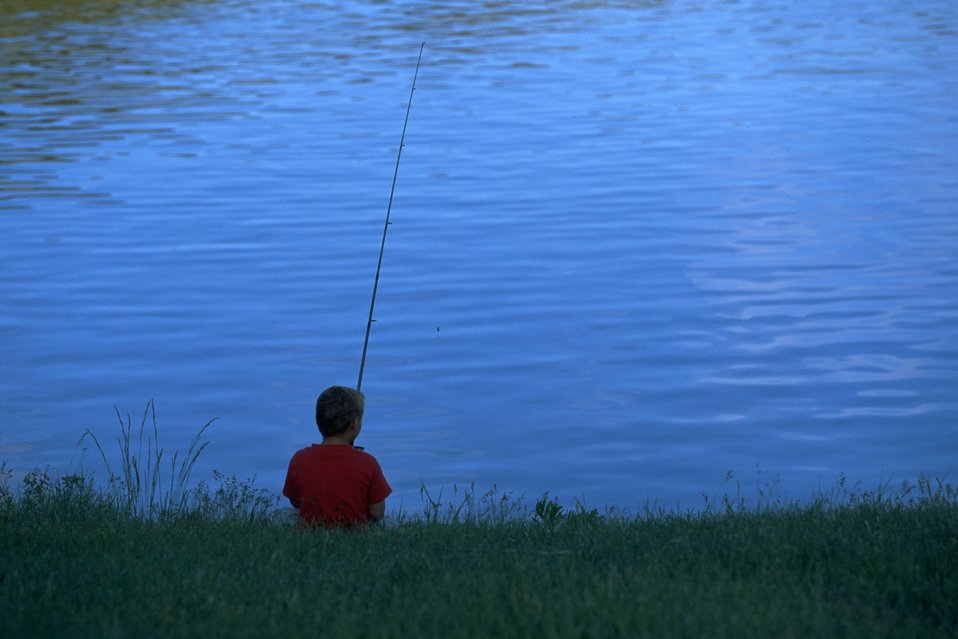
Boy fishing on the bank of Holter Lake in the evening